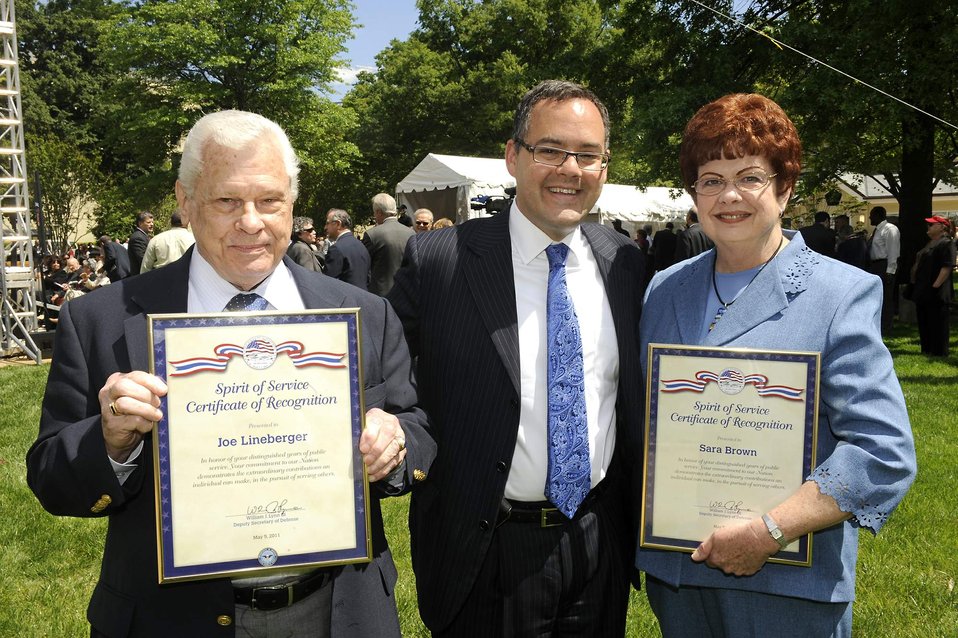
Spirit of Service Award

Daniel Ginsberg, the assistant secretary of the Air Force for manpower and
reserve affairs (center), shares in celebration with Joe Lineberger and Sara
Brown during a ceremony honoring them for 50 years of public service May 5, 2011, in the Pentagon courtyard. Mr. Lineberger is a senior executive and
works under Mr. Ginsberg. Ms. Brown works for Air Force Materiel Command. There were about 50 Department of Defense civilians honored in the ceremony, some with more than 60 years of service.